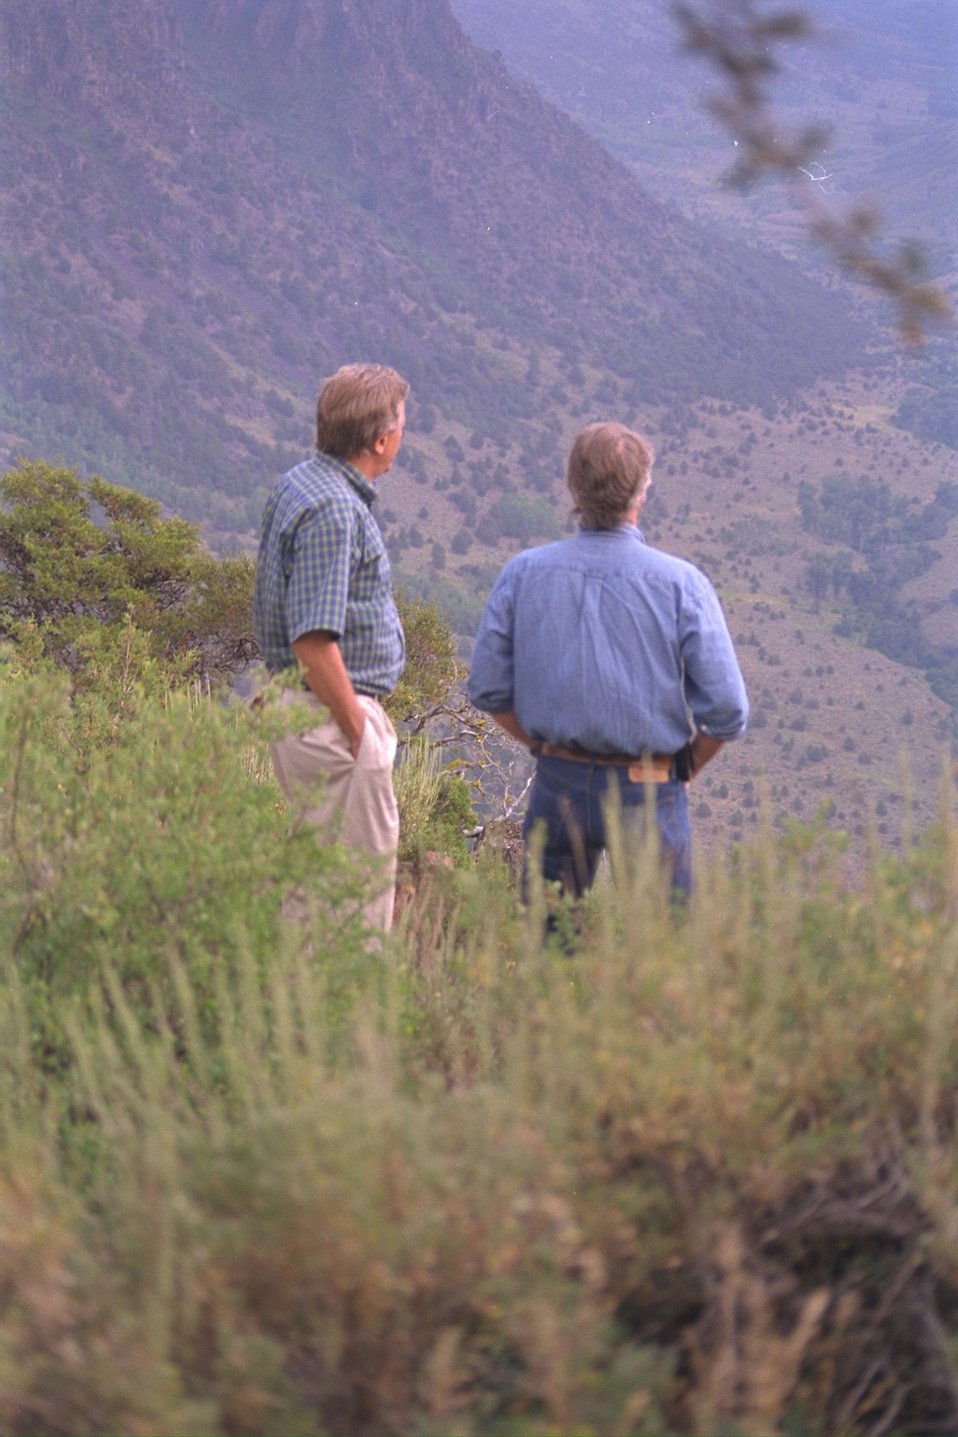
Secretary Babbitt (left) and Governor Kitzhaber (right) at Big Indian Gorge on the Steens.